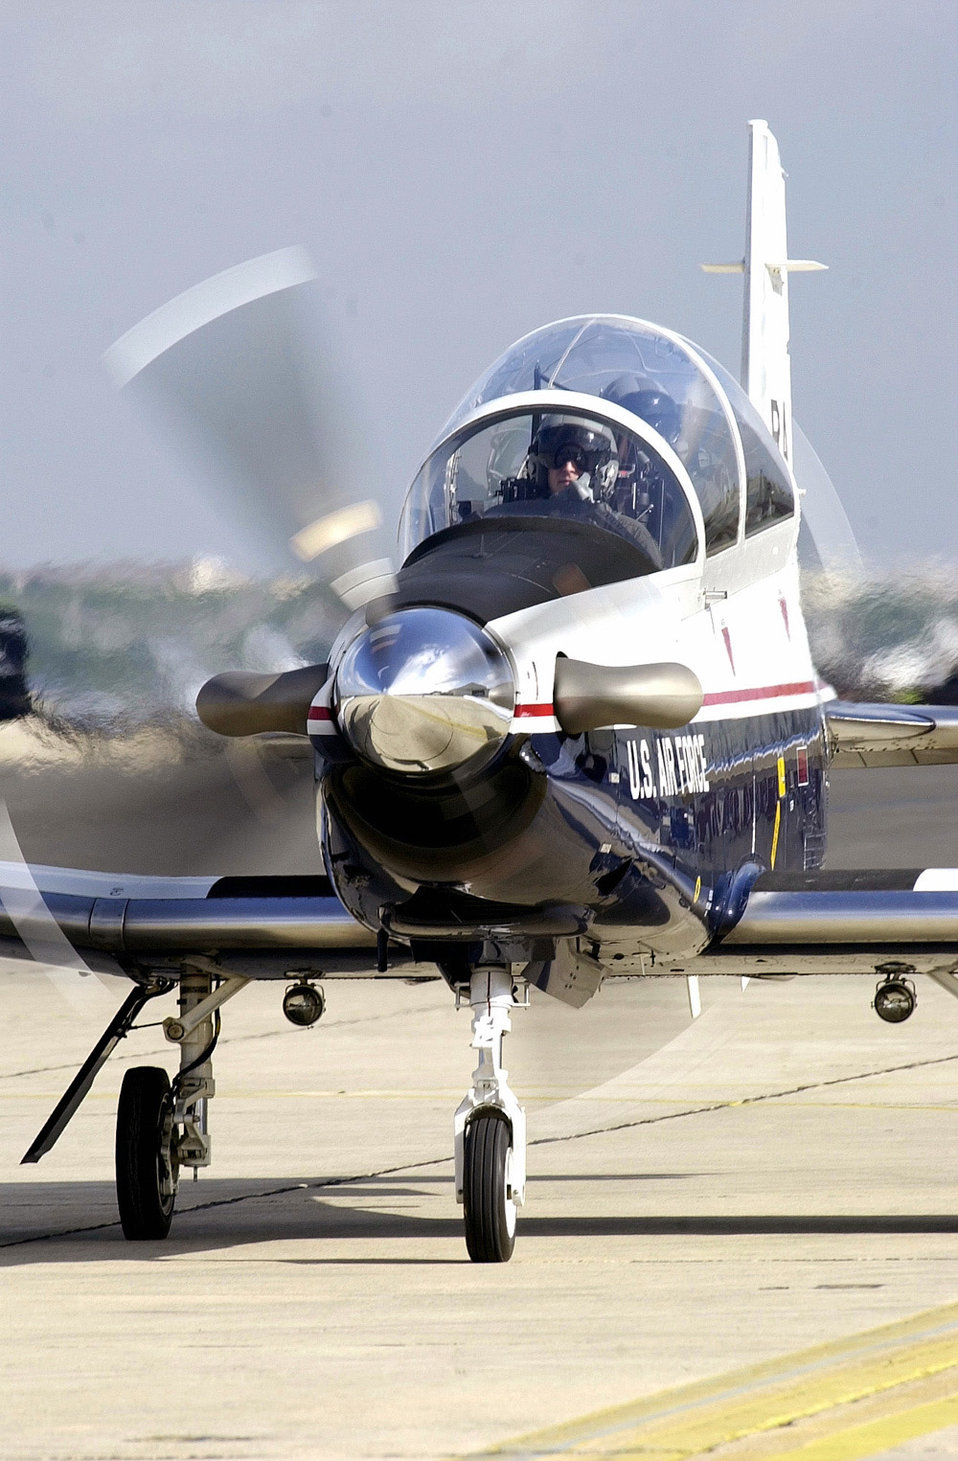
Texan taxis for take off

RANDOLPH AIR FORCE BASE, Texas -- A T-6A Texan II taxis into position here. The 12th Flying Training Wing was the first Air Force installation to fly the Texan and is the host unit for the T-6A Texan II Demonstration Team.